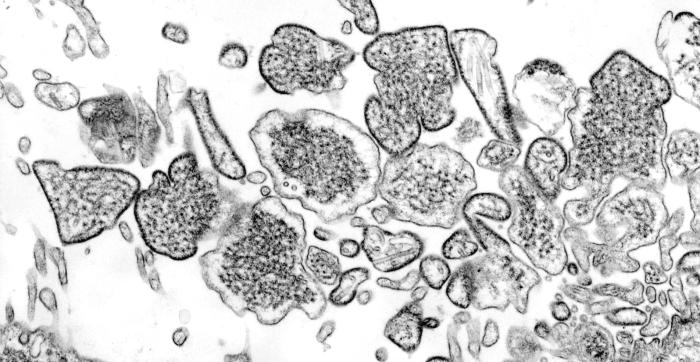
Nipah virus

This transmission electron micrograph (TEM) depicted a number of Nipah virus virions that had been isolated from a patient's cerebrospinal fluid (CSF) specimen. Nipah virus is a member of the family Paramyxoviridae, and is related, but not identical to Hendra virus. Nipah virus was initially isolated in 1999 upon examining samples from an outbreak of encephalitis and respiratory illness among adult men in Malaysia and Singapore.Hendra virus, formerly called equine morbillivirus, is also a member of the family Paramyxoviridae. The virus was first isolated in 1994 from specimens obtained during an outbreak of respiratory and neurologic disease in horses and humans in Hendra, a suburb of Brisbane, Australia.